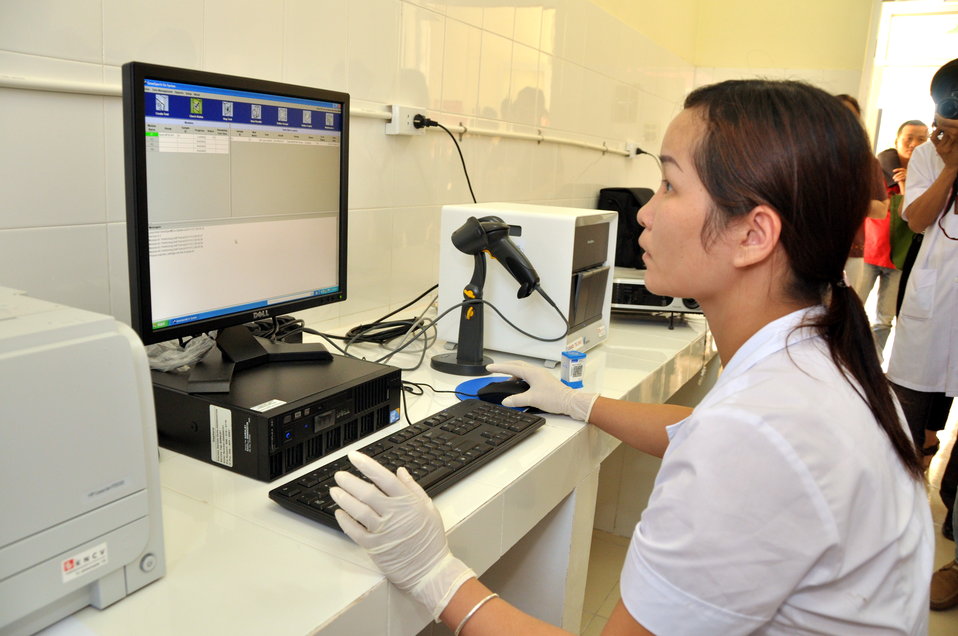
USAID supports new rapid detection TB equipment